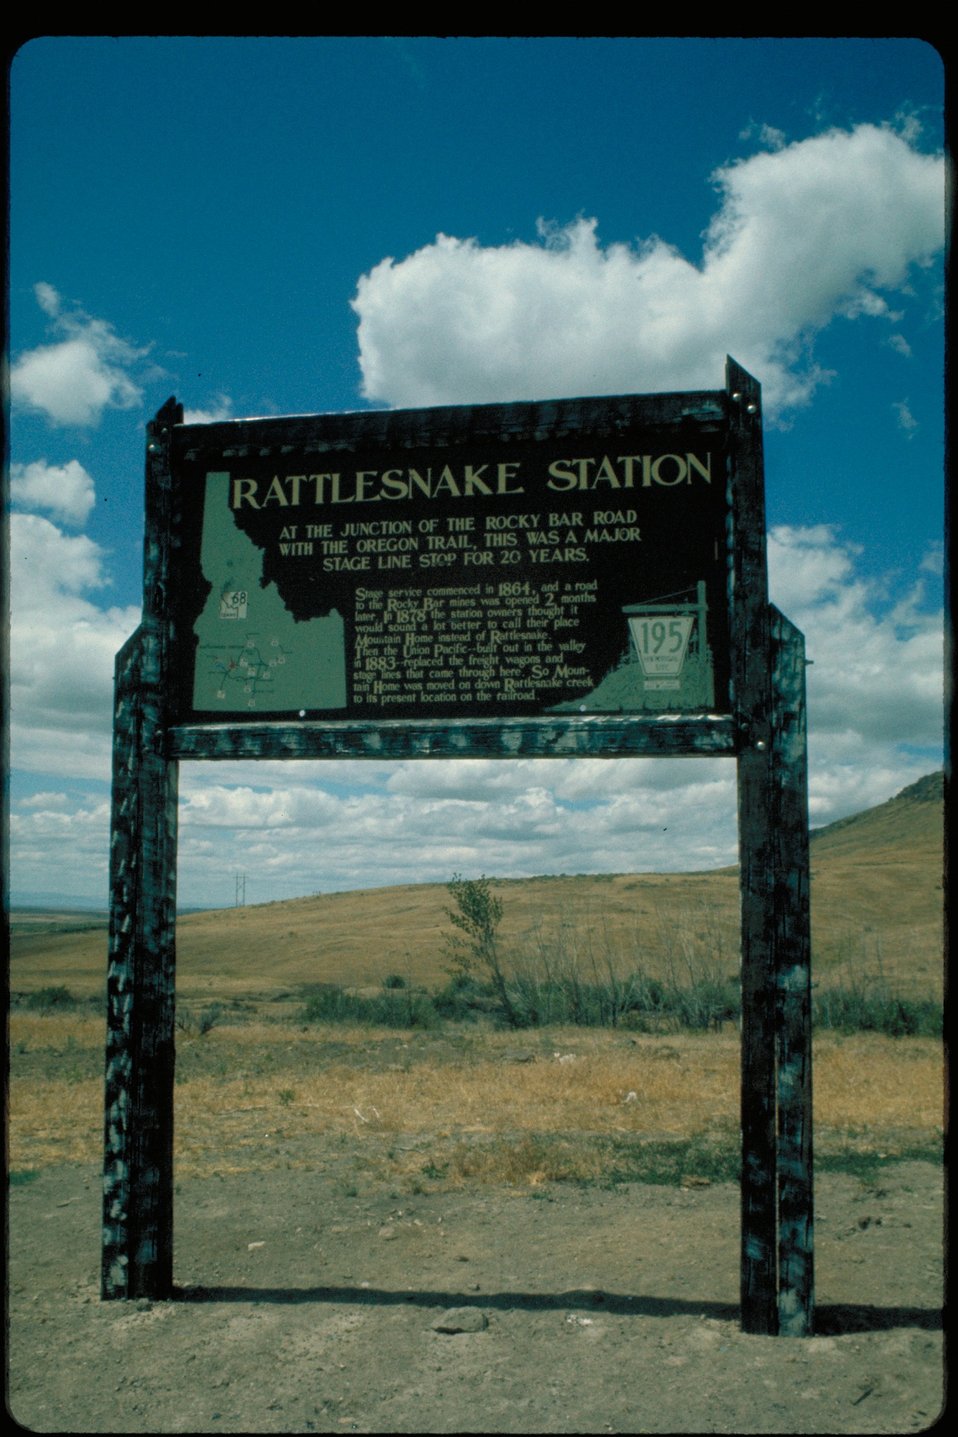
Oregon Trail sign East of Mountain Home Lower Snake River District